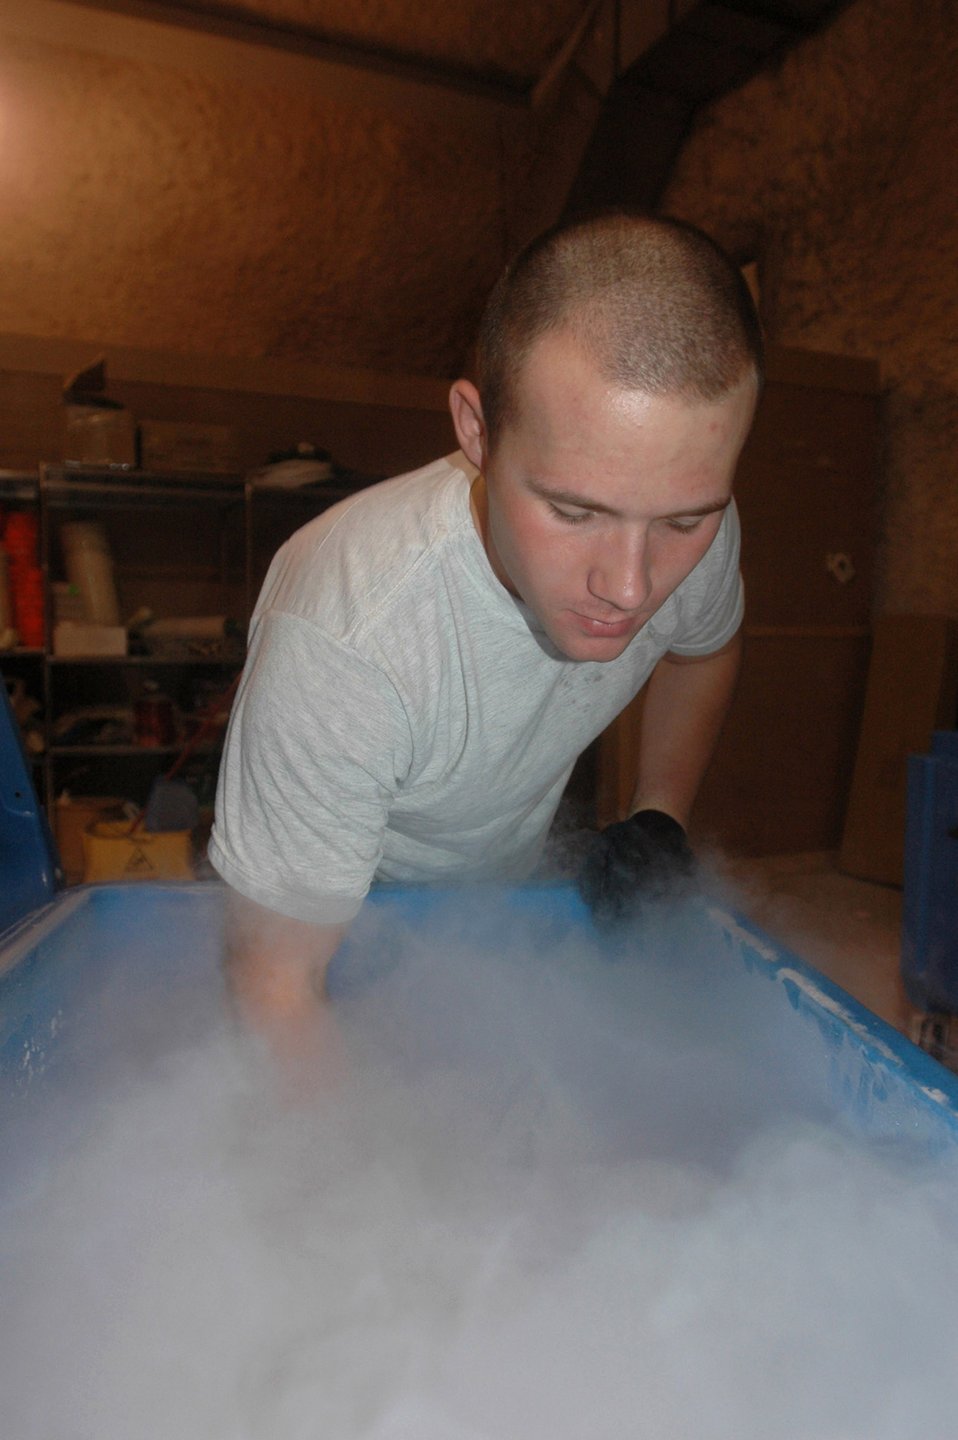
Blood center supports U.S., coaltion warfighters

Airman 1st Class David Lavallee scoops a load of dry ice used to keep units of blood components cool while they're shipped to forward-deployed locations Aug. 4 in Southwest Asia. Airman Lavallee is assigned to the 379th Expeditionary Communications Squadron.